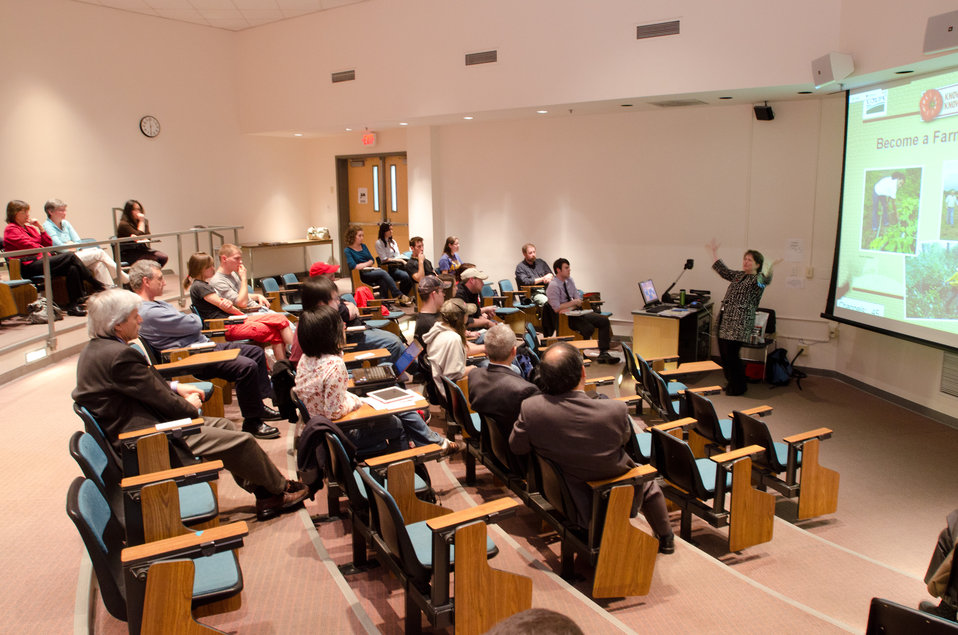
U.S. Department of Agriculture (USDA) Deputy Secretary Kathleen Merrigan talked about becoming a farmer during her “Know your Farmer Know your Food” initiative to students and faculty at the Animal Sciences / Agricultural Engineering Building at the University of Maryland, in College Park, MD, on Thursday, April 7, 2011. Deputy Secretary Merrigan’s interactive presentation utilized wireless polling in the lecture room to present questions to the audience who used handheld devices to choose from a list of multiple answers. Their answers were instantly tabulated, then Merrigan revealed their top choice on the screen, followed by the correct answer, usually revealing an error and misconceptions. Her talk covered support of local farmers; strengthening rural communities, promoting healthy eating, protecting natural resources; grants, loans and other support USDA provides as well as stories of innovation; industry and government cooperation; and careers opportunities in agriculture, ranching and the USDA.